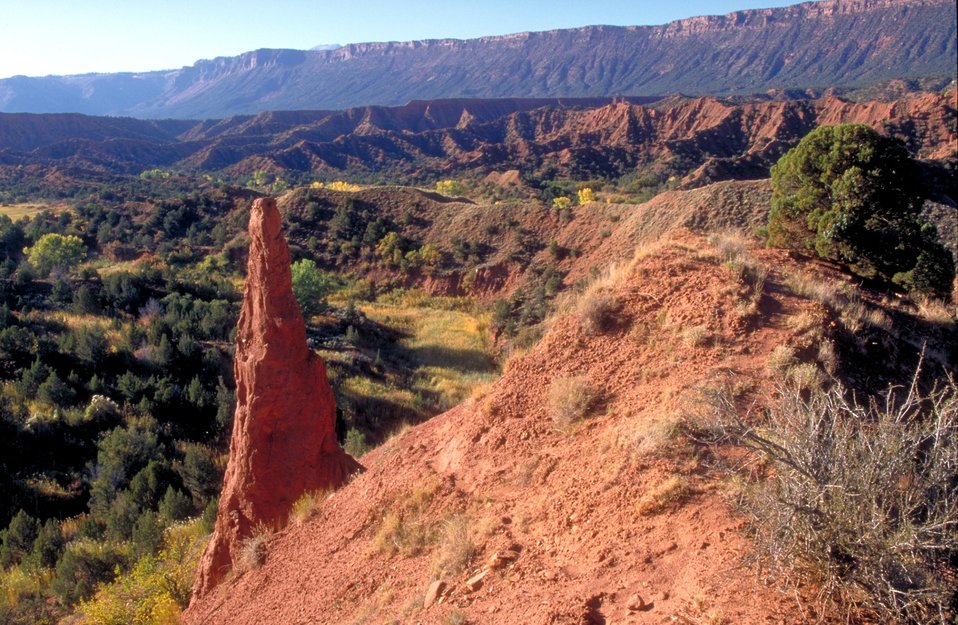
Spire in Onion Creek drainage, Fisher Mesa in background near Moab, Utah.